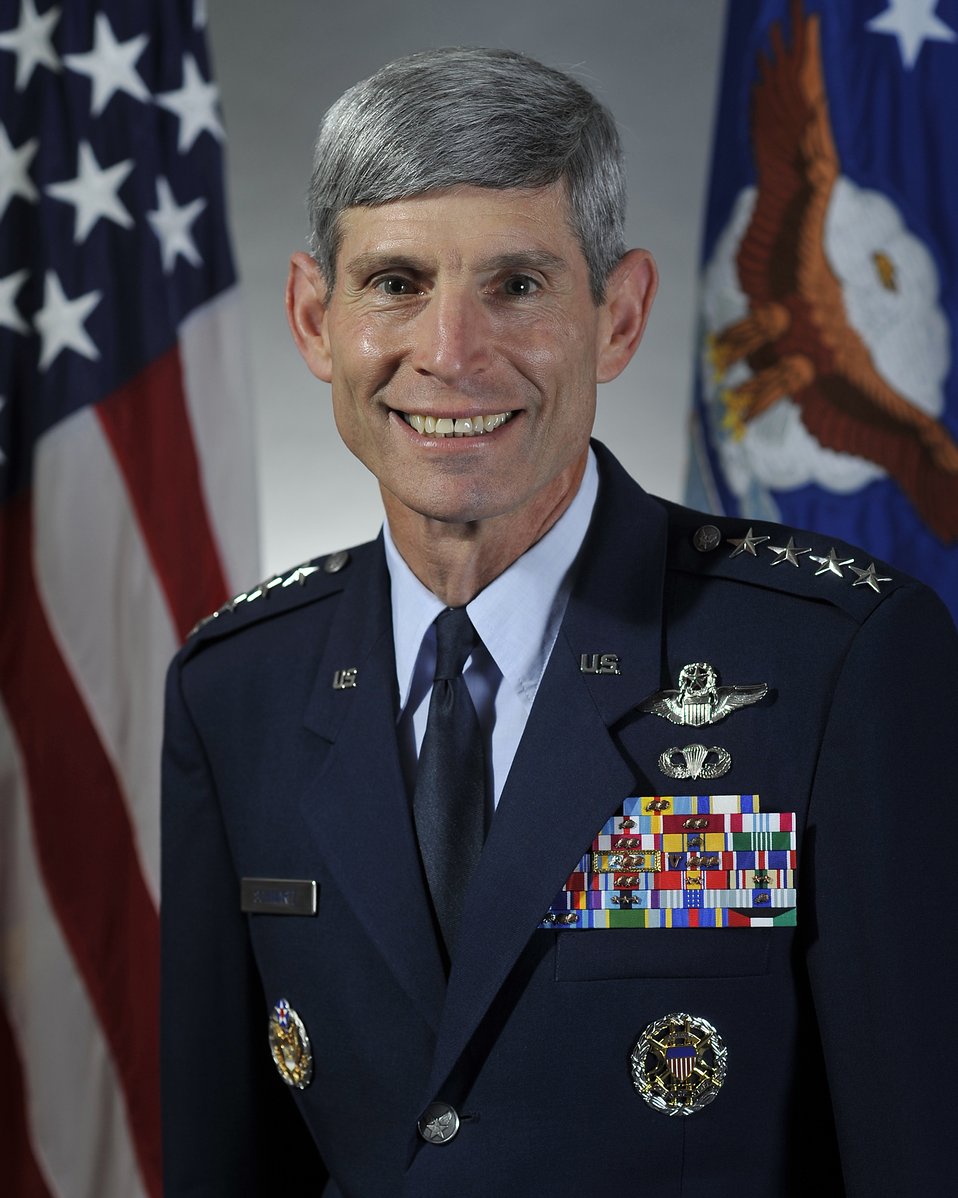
Gen. Norton A. Schwartz

Air Force Chief of Staff Gen. Norton A. Schwartz. He is the 19th chief of staff.